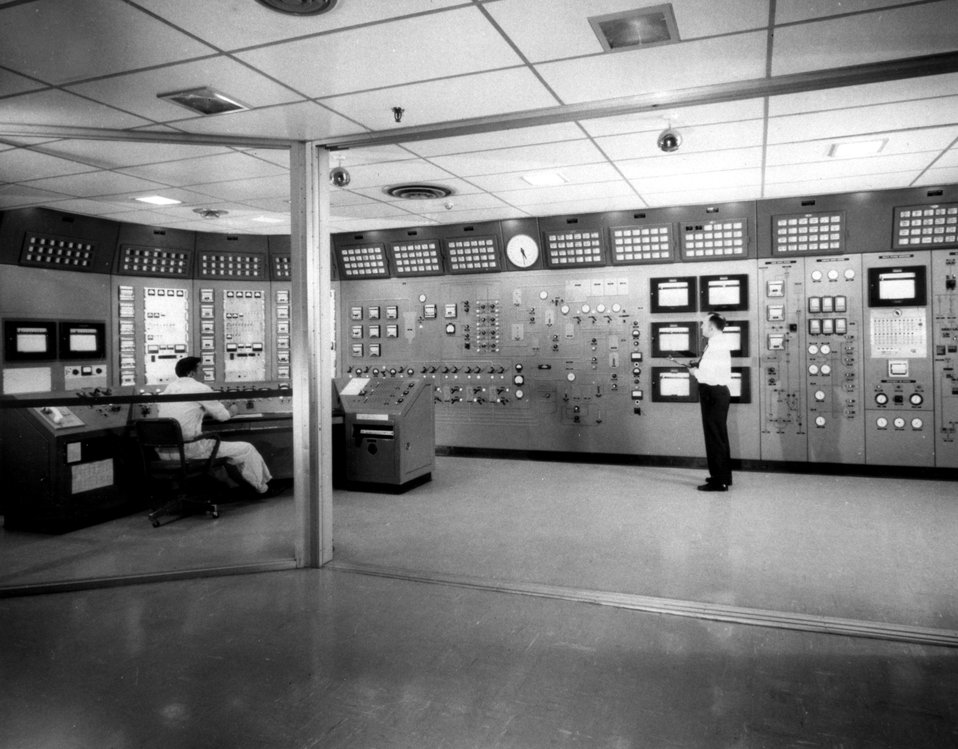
All operations of the High Flux Isotope Reactor at the AEC's Oak Ridge National Laboratory are monitored from this instrument-packed control room. c. 1968